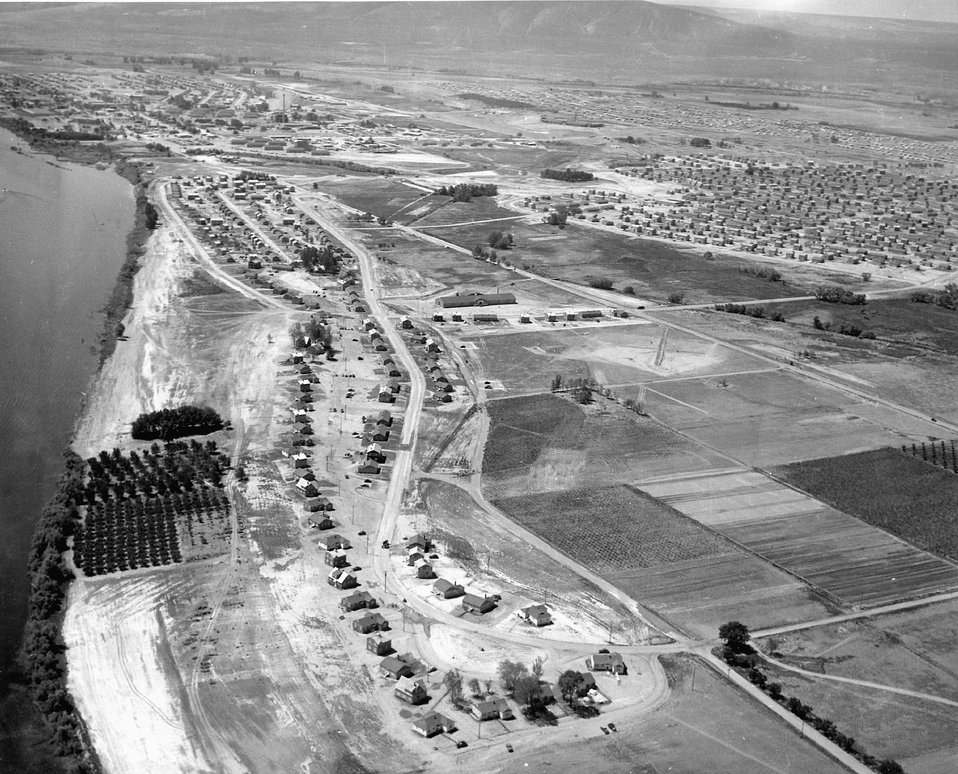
A view of Richland, a model city of 17,000 built for administration purposes and for the new housing of operations personnel, at the Hanford Engineer Works. This view shows a few of the homes stretched along the Columbia River. c. 1944